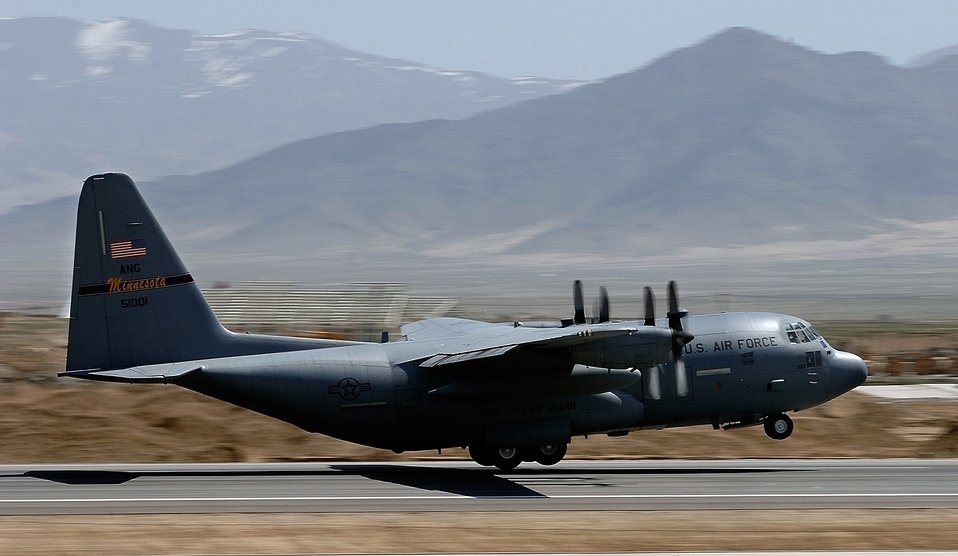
Operation Enduring Freedom

A C-130 Hercules takes off out of the Bagram Airfield flightline in support of Operation Enduring Freedom, March 27. The C-130 North Carolina Air National Guard crew is providing critical supplies to replenish U.S. ground forces in Afghanistan.